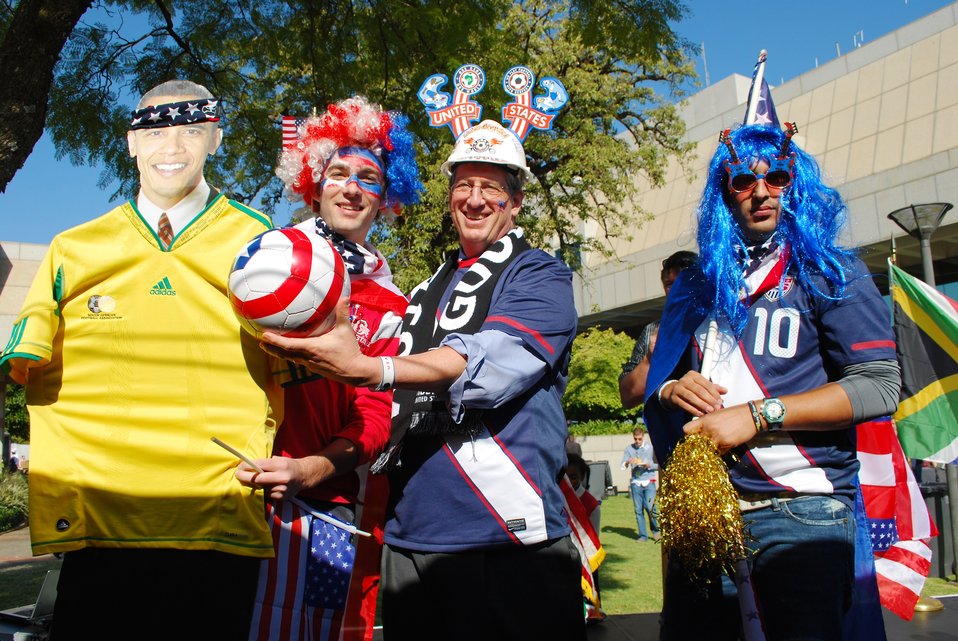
Ambassador Gips Awards Best-Dressed Fans

U.S. Ambassador to South Africa Donald Gips hands a U.S. soccer ball to one of the winner of the best-dressed contest at the Team USA pep rally before the U.S. vs. Algeria World Cup match on June 23, 2010, in Pretoria, South Africa.